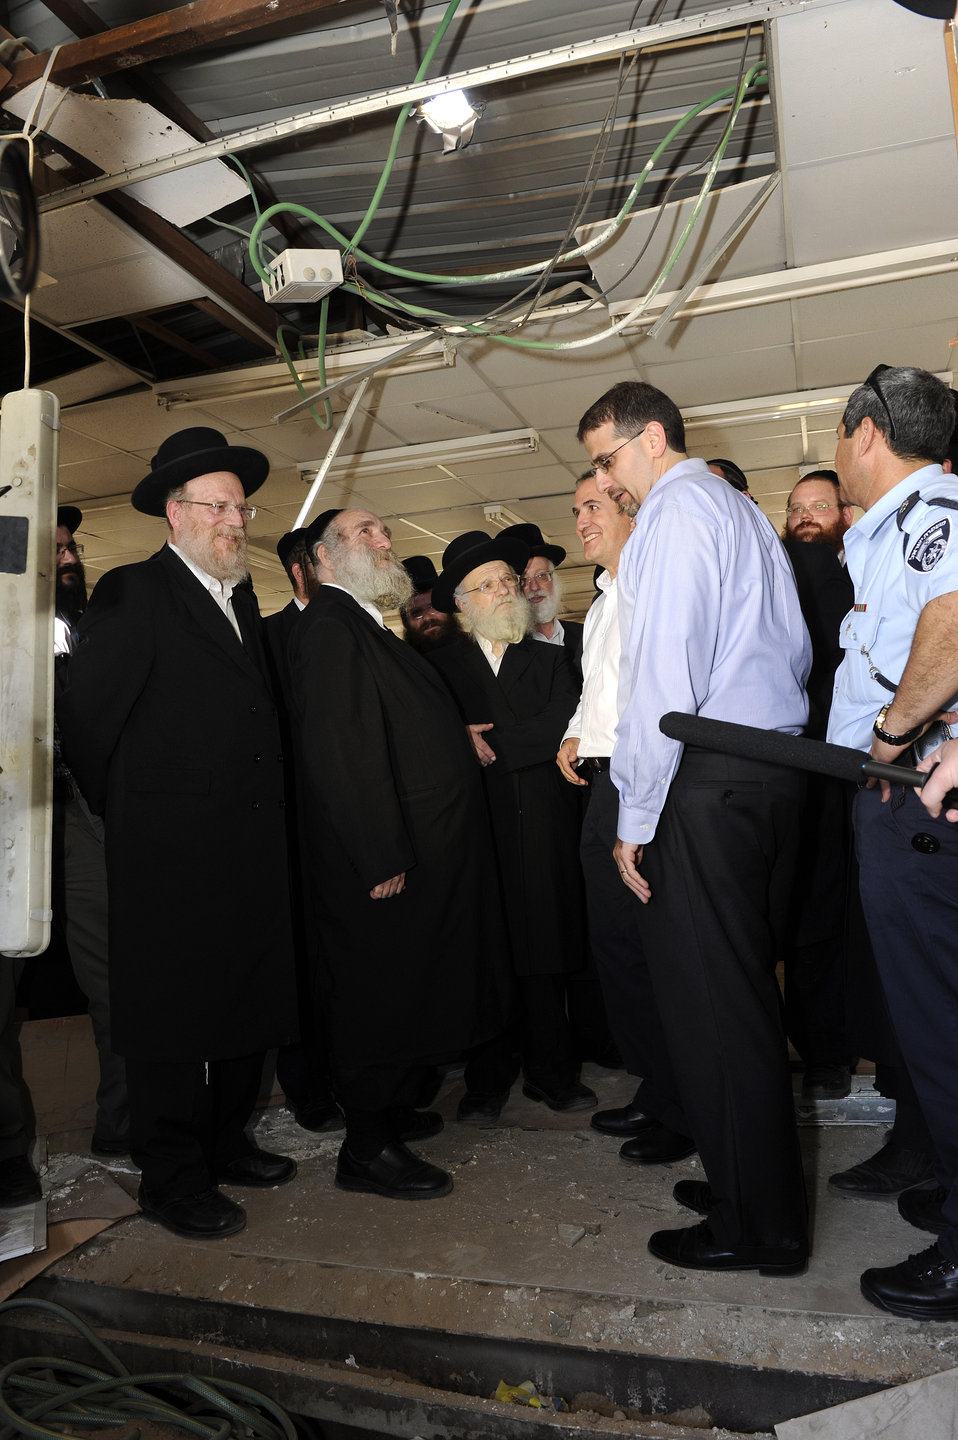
Ambassador Shapiro Tours Ashdod's Operations Center

U.S. Ambassador to Israel Dan Shapiro, with Mayor Dr. Yechiel Lasri, tours the municipality’s operations center and the Jewish seminary where two Grad missiles, fired from the Gaza Strip, exploded and wounded several people, in Ashdod, Israel, on August 23, 2011. State Department photo/ Public Domain]